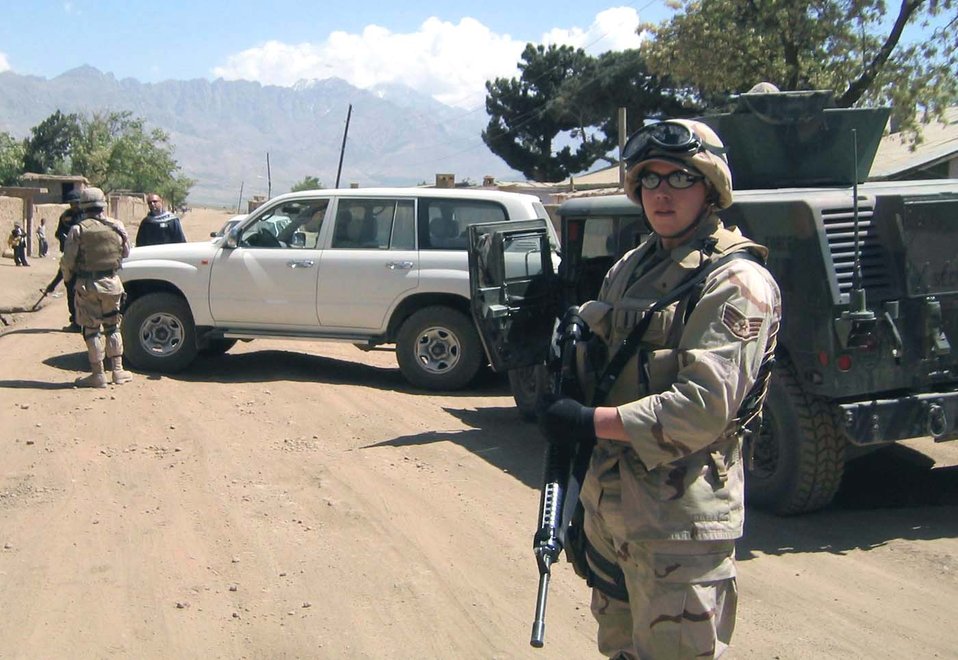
On a mission

OUTSIDE OF BAGRAM AIR BASE, Afghanistan -- Staff Sgt. Christopher Norte provides security during a recent convoy. He is assigned to the 455th Expeditionary Security Forces Squadron and is deployed from Misawa Air Base, Japan.